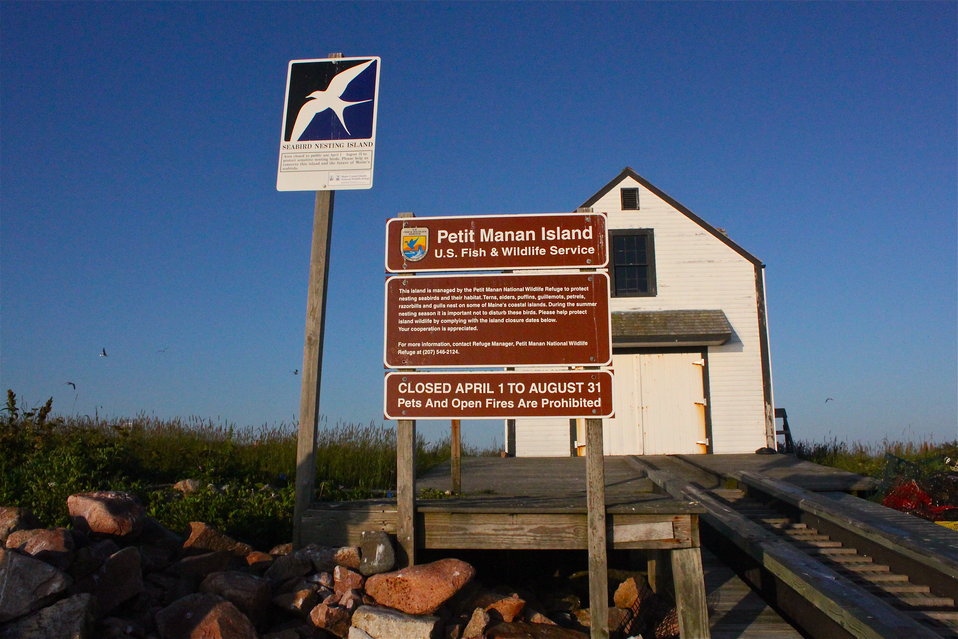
Petit Manan Island Signs